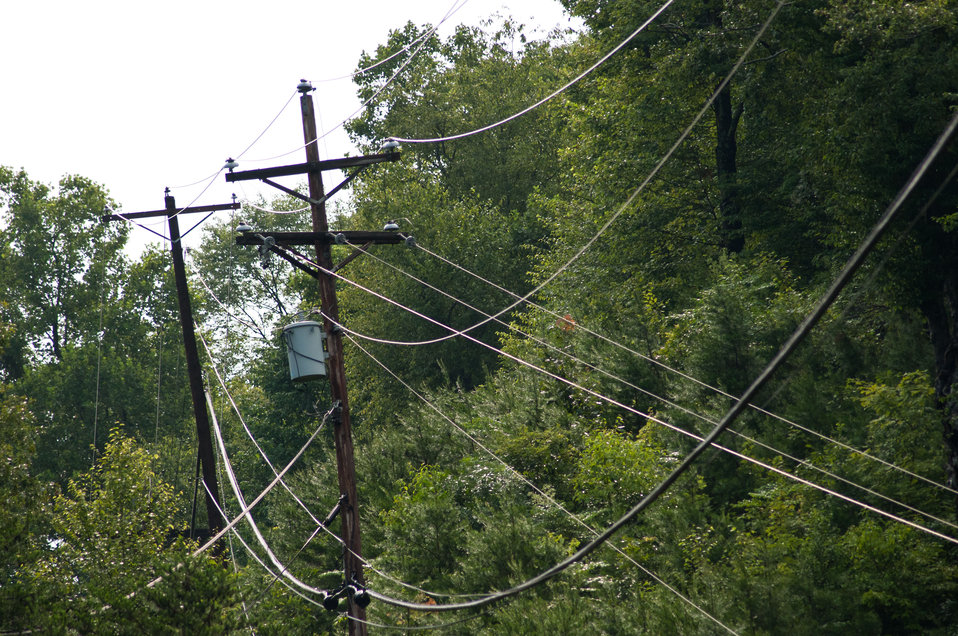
Power and communications lines between Lexington and Pikeville, KY, on Tuesday July 12, 2011. This is the Eastern Kentucky region of the Appalachian Mountains.